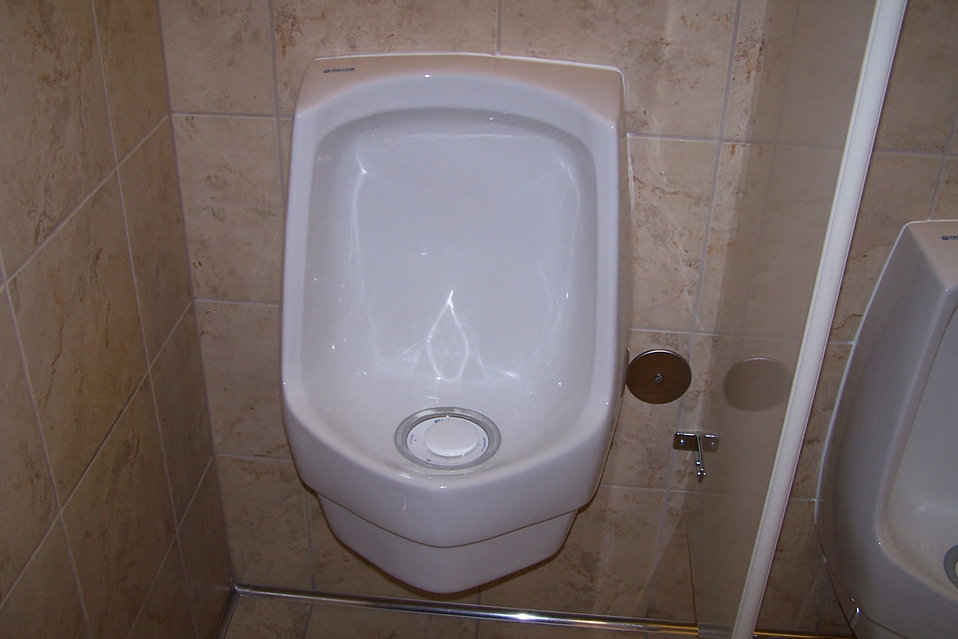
Waterless Urinal

The Region 8 Office Building was outfitted with high-efficiency WaterSense products. The building has 72 dual flush toilets and 18 waterless urinals.

To find out more about the Region 8 green building: www.epa.gov/region8/building/

To find out more about the Region 8 green building water conservation: www.epa.gov/region8/building/water conservation.html